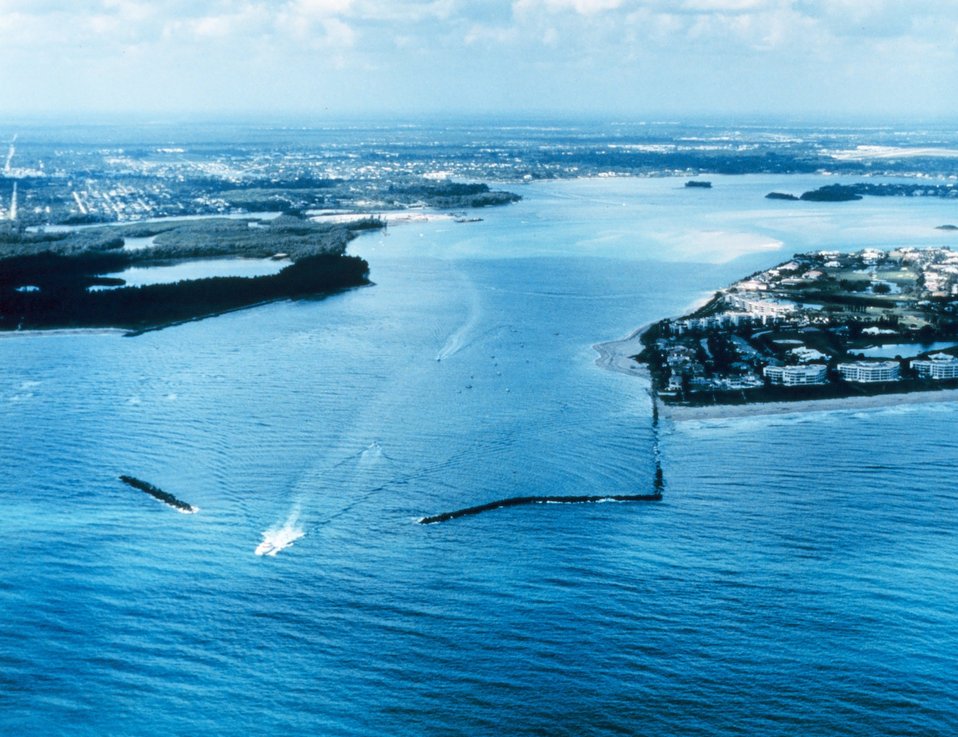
2729 North Latitude 8020 West Longitude.